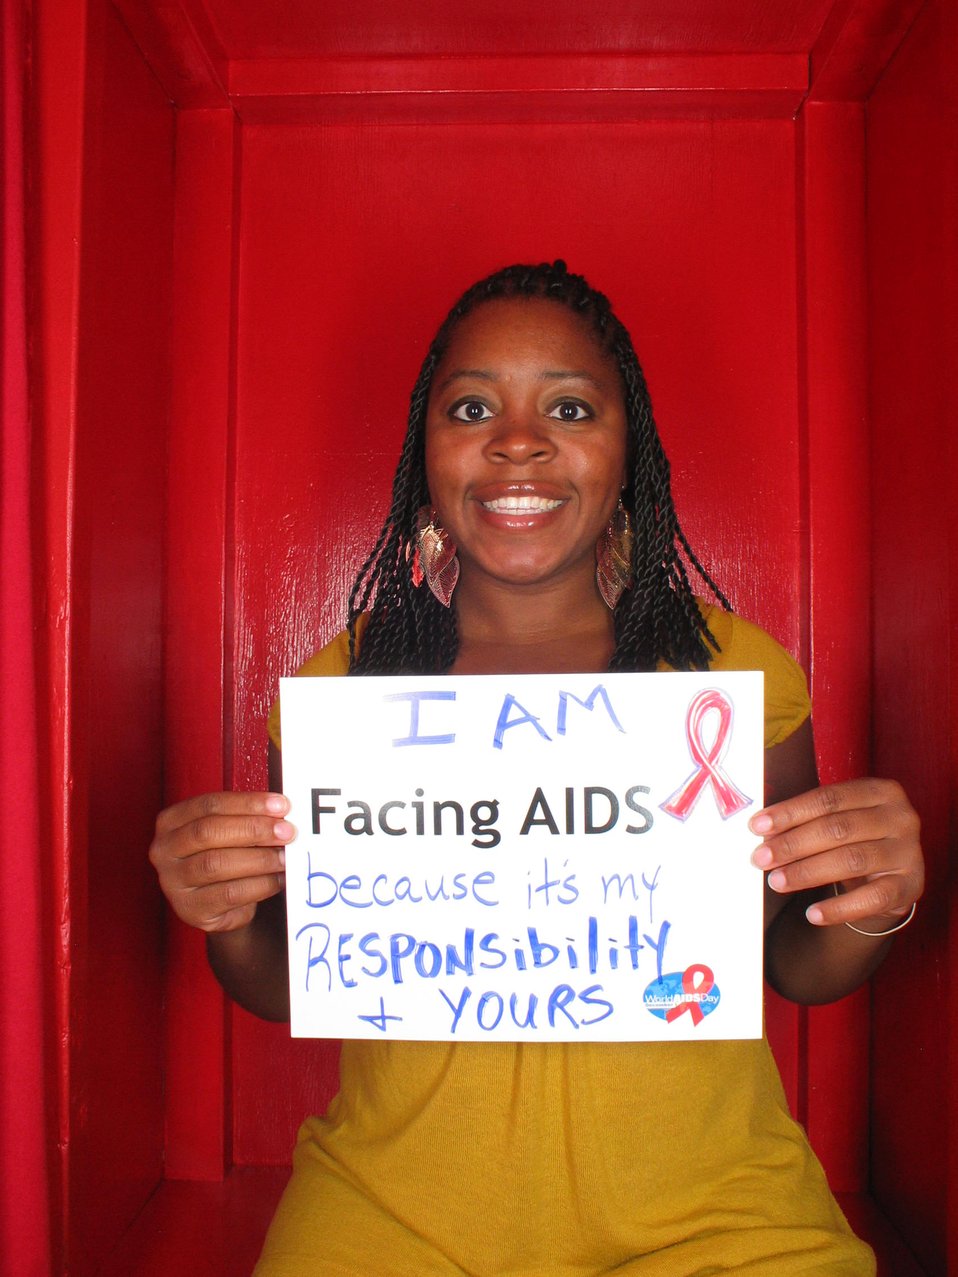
I am Facing AIDS because it my responsibility and yours